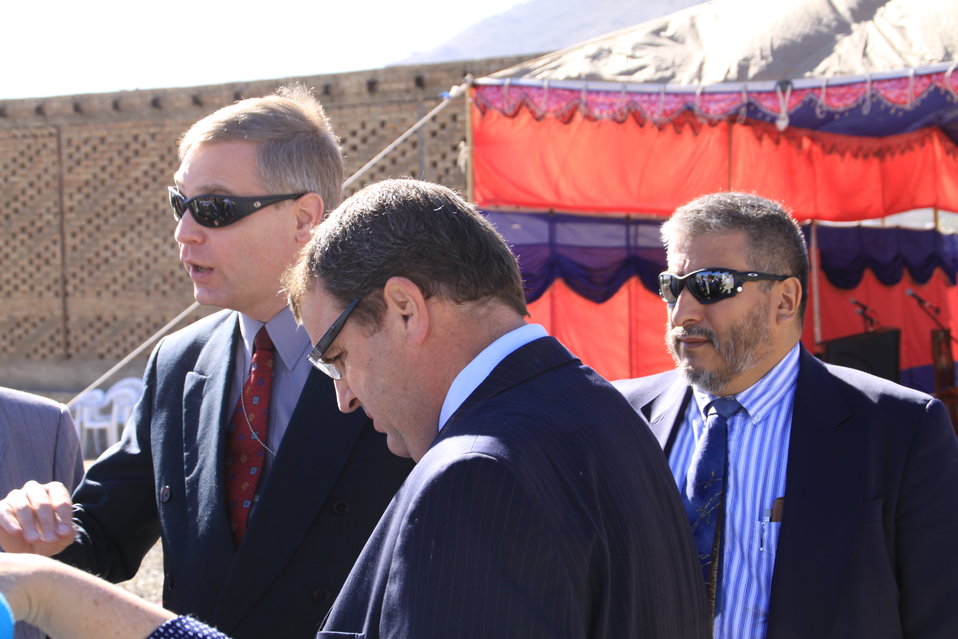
AVIPA Plus Wheat Seed Distribution 101005

US Ambassador Karl Eikenberry and USAID Acting Mission Director Kevin Brownawell joined the Minister of Agriculture, Irrigation and Livestock, H.E. Minister Mohammed Rahimi in signing a Memorandum of Understanding and distributing vouchers to area farmers for wheat and fertilizer.